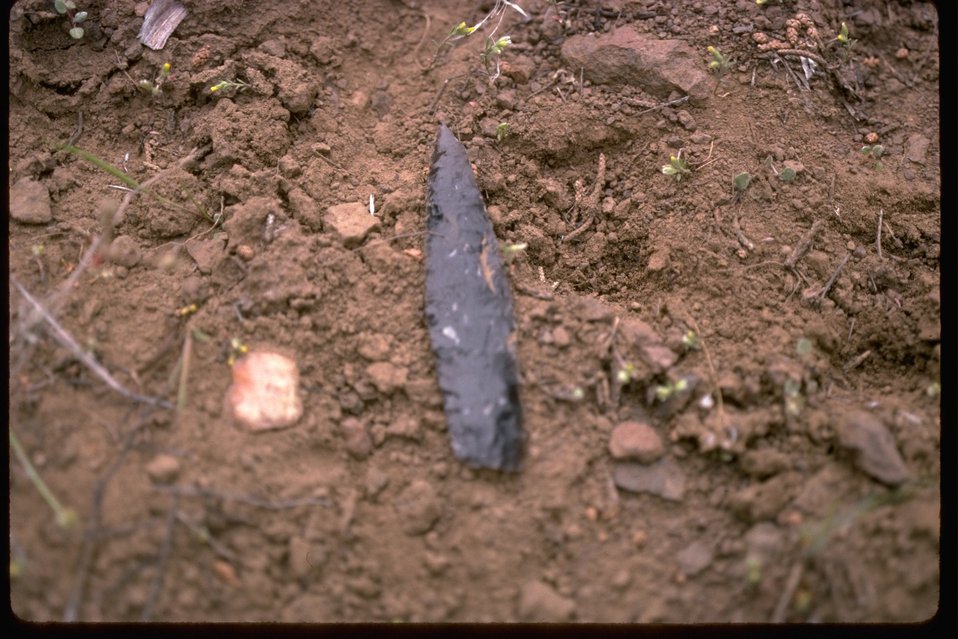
Two arrow heads: one being a partial point and the other a spear point.